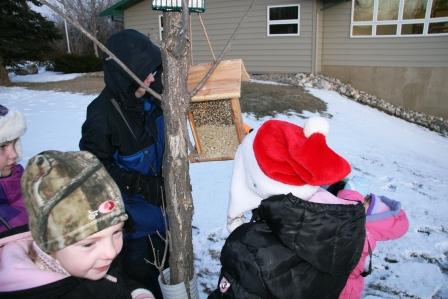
Bird Feeders and Types of Seed

CBC4Kids - Participants stopped at various feeders around Refuge headquarters to examine the types of bird seed and learn about what wintering birds like to eat.

Check out the story that was featured in the Kenmare News here!